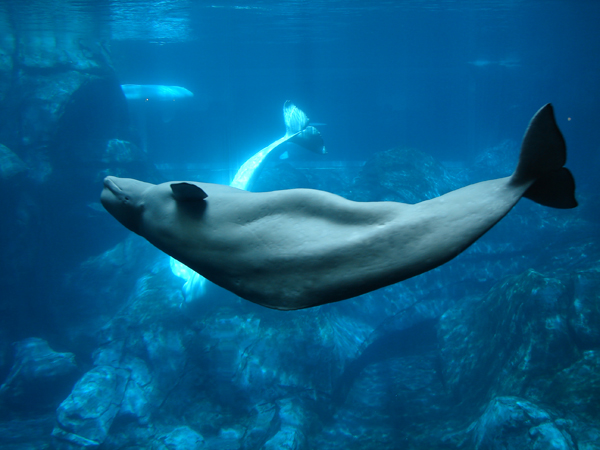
Photo by Angela Grider. Beluga whale at the Georgia Aquarium.